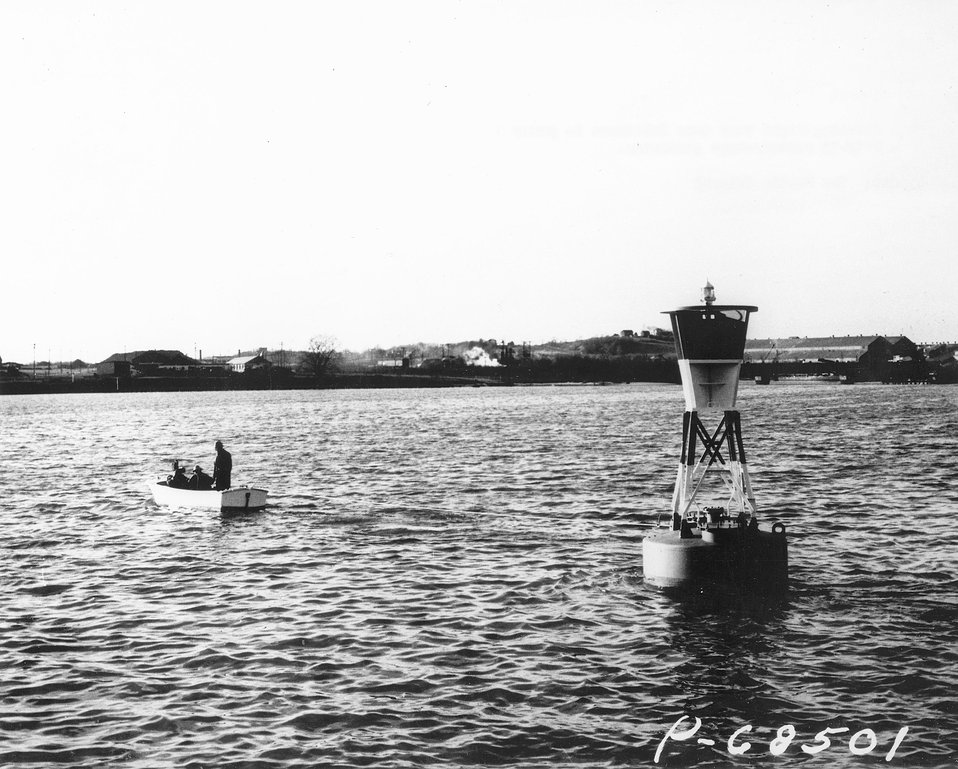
This flashing-light buoy near Baltimore is powered by a SNAP 7A radio type generator.